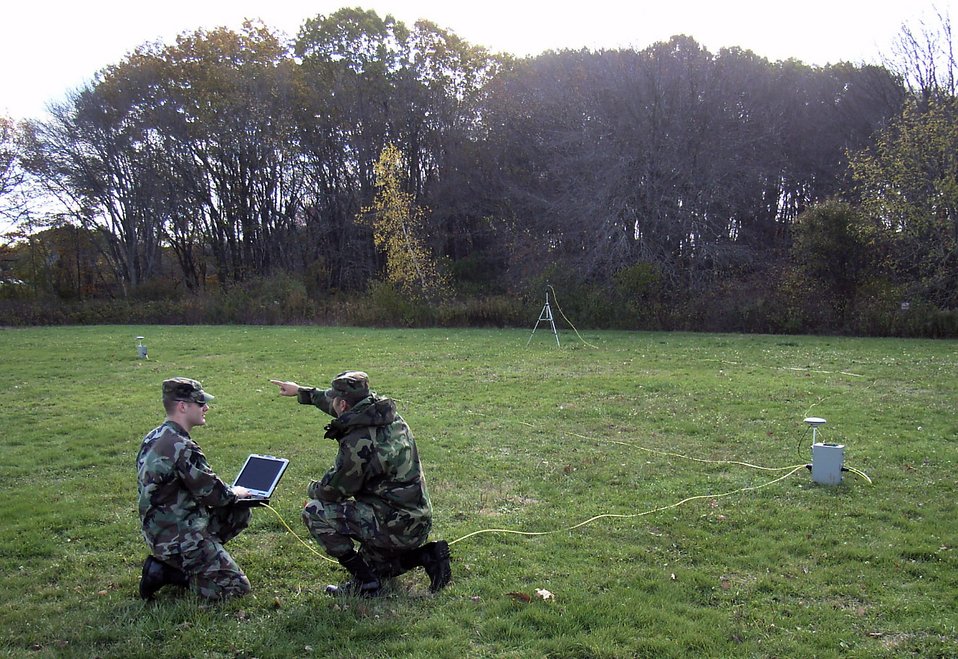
Precision landing system ready for take off

First Lt. Pat Ris (left) and 1st Lt. Juan Gherardy set up a portable version of the Joint Precision Approach Landing System outside Hanscom Air Force Base, Mass. The equipment, which can be carried in two rucksacks, consists of two GPS antennas and receivers, a ruggedized notebook computer, networking hardware and an aircraft data link.